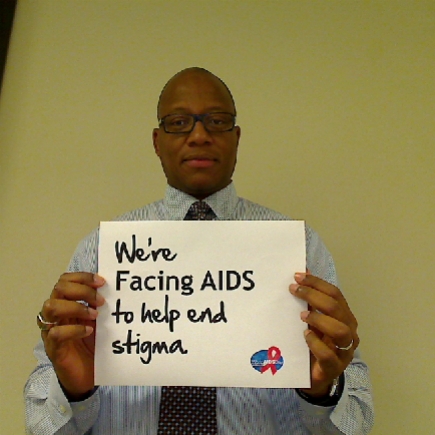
We're Facing AIDS to help end stigma.